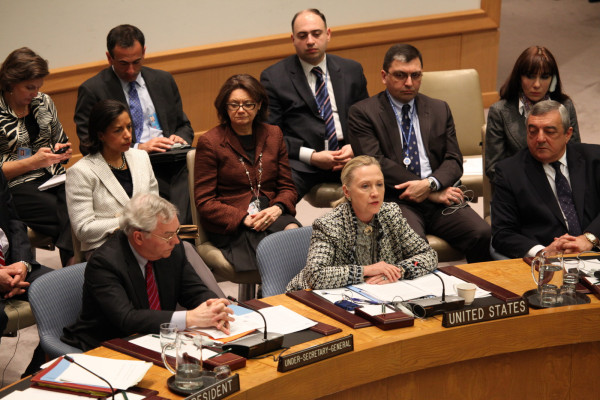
Secretary Clinton Participates in a UNSC Session on the Middle East

U.S. Secretary of State Hillary Rodham Clinton participates in a United Nations Security Council session on the Middle East chaired by the United Kingdom at the United Nations in New York, New York, on March 12, 2012. U.S. Permanent Representative to the United Nations, Ambassador Susan Rice, is pictured in the second row on the left.